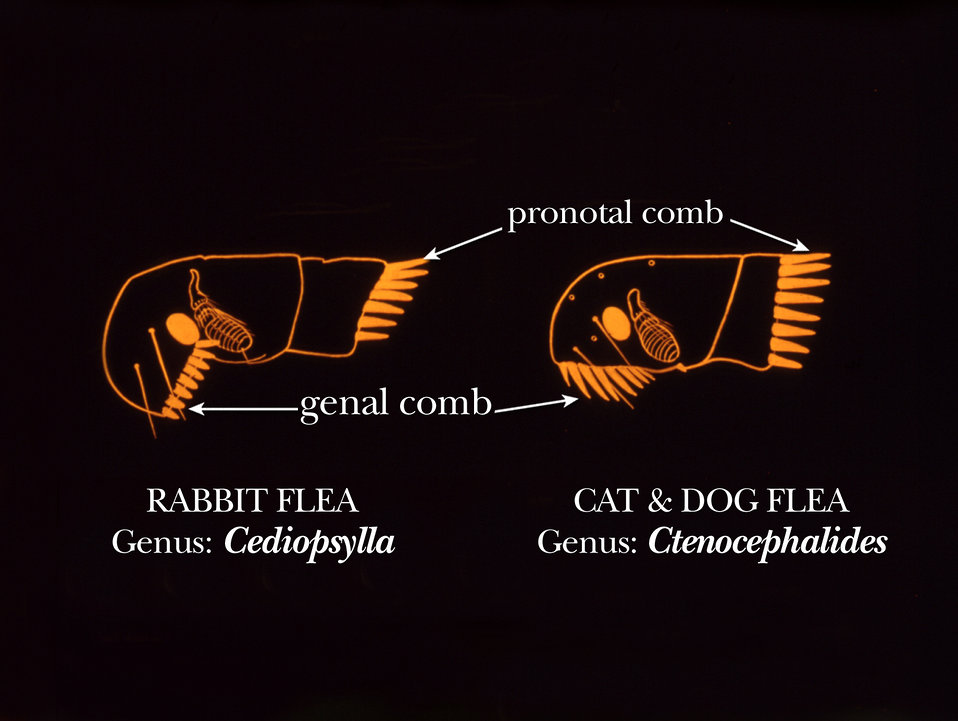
This drawing shows some of the characteristics of fleas belonging to the genera Cediopsylla and Ctenocephalides.